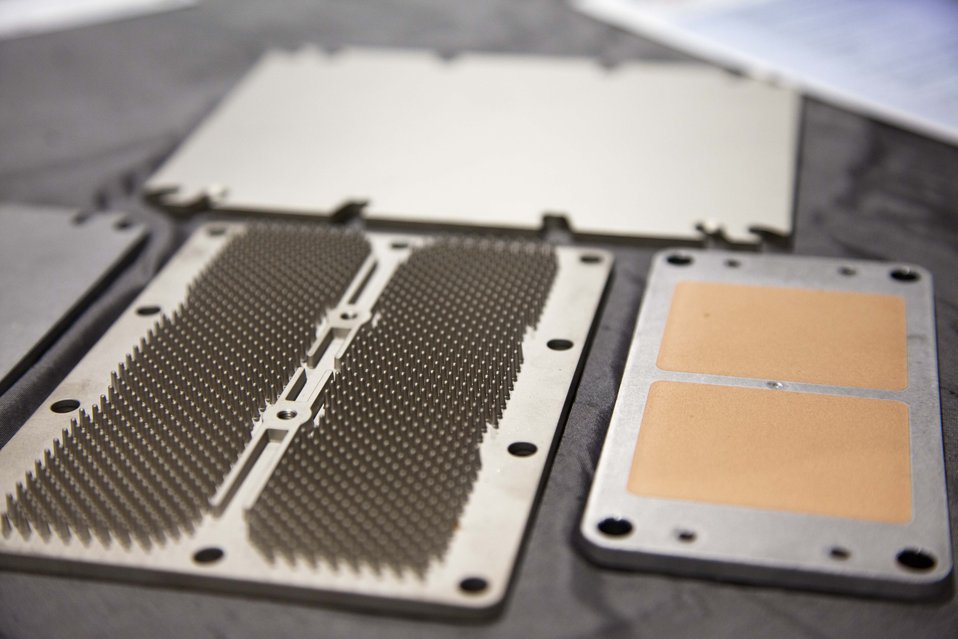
Pictured here are a few different heat sink plates designs by CPS Technologies. These heat sinks combine aluminum and silicon carbide to lower the thermal expansion of and mechanical stresses to power conversion devices in trains and hybrid electric vehicles.